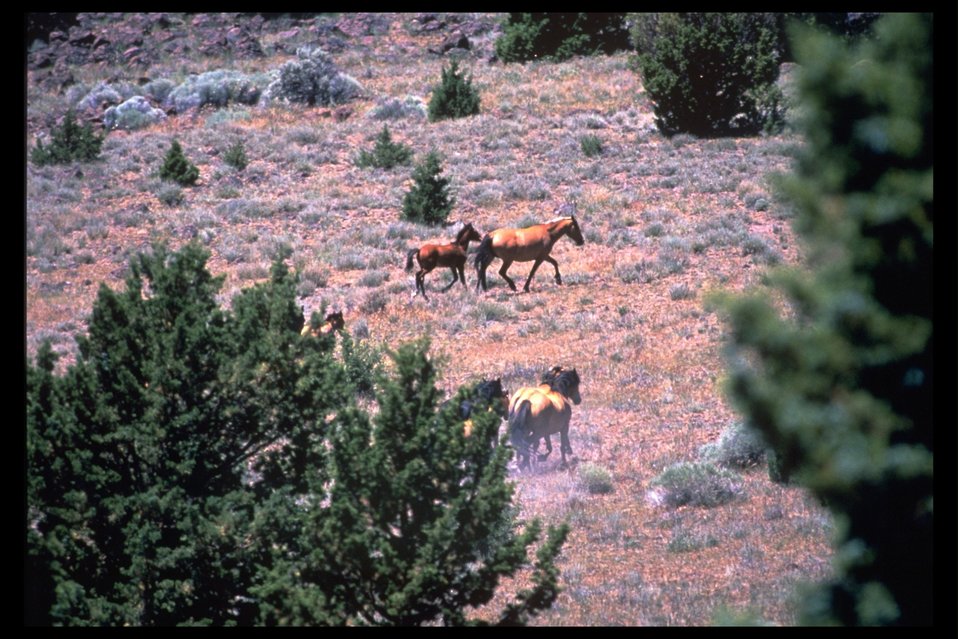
Kiger horses on the range, Mesteno in foreground.